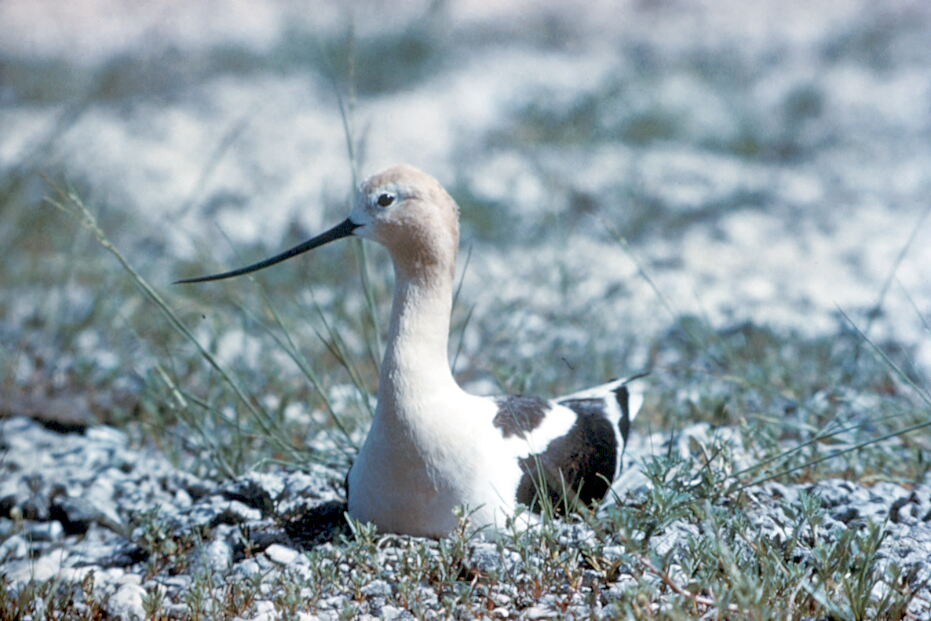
American Avocet.